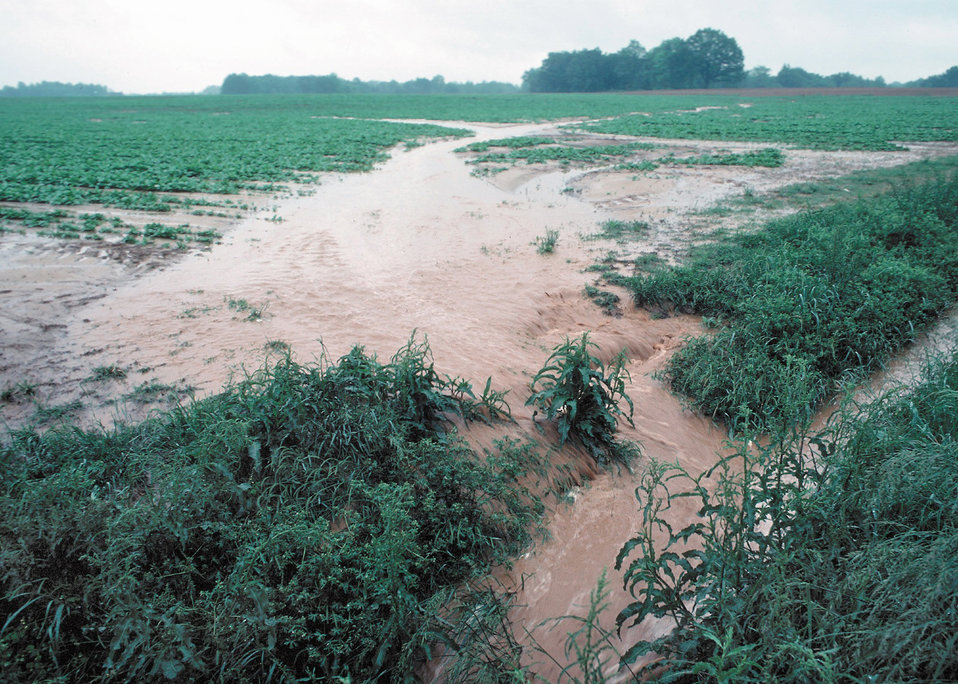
Water flows off a farm in Tennessee following a storm. The U.S. Department of Agriculture ‘s (USDA) Natural Resources Conservation Service has developed a new web-based tool called the Water Quality Index for Agricultural Runoff (WQIag) to help producers calculate the quality of water flowing off their fields. This information provided by WQIag enables farmers to calculate the consequences of their soil usage in terms of water quality, using less tillage, less fertilizer, natural pest management techniques and other conservation practices in the efficient management of their farms.